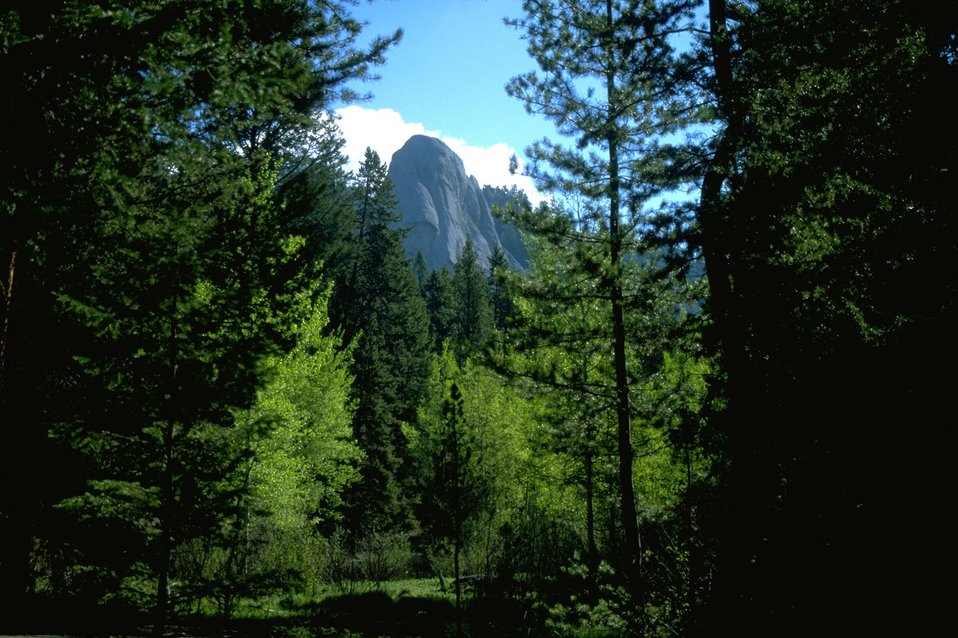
Rock formation framed by dense trees